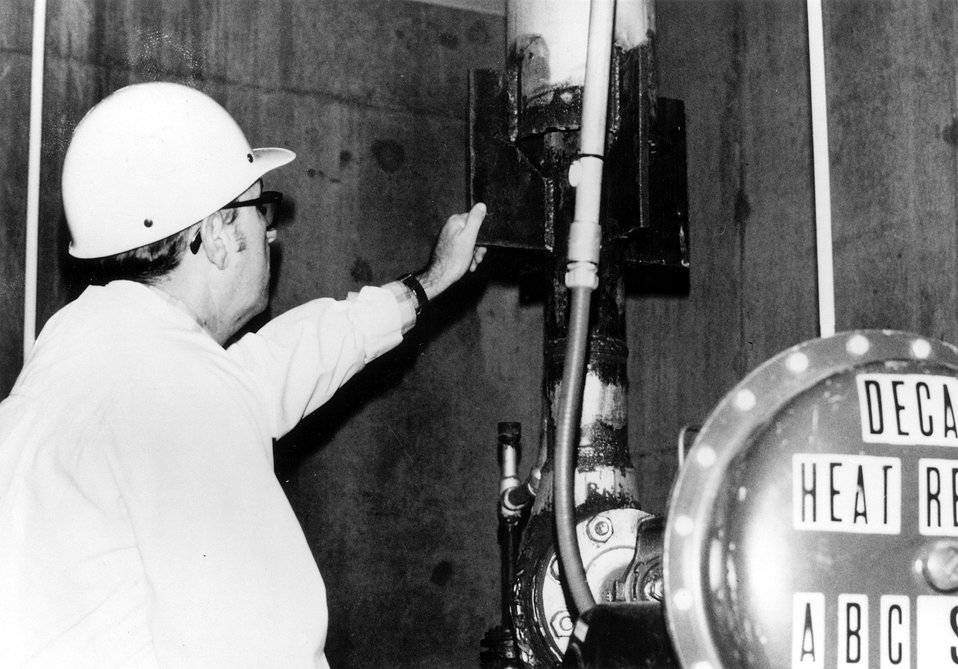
An AEC inspector at the Surry plant in Virginia checks the VEPCO modification to a decay heat discharge nozzle which vents steam from the decay heat release valve to the atmosphere. Circa 1972.